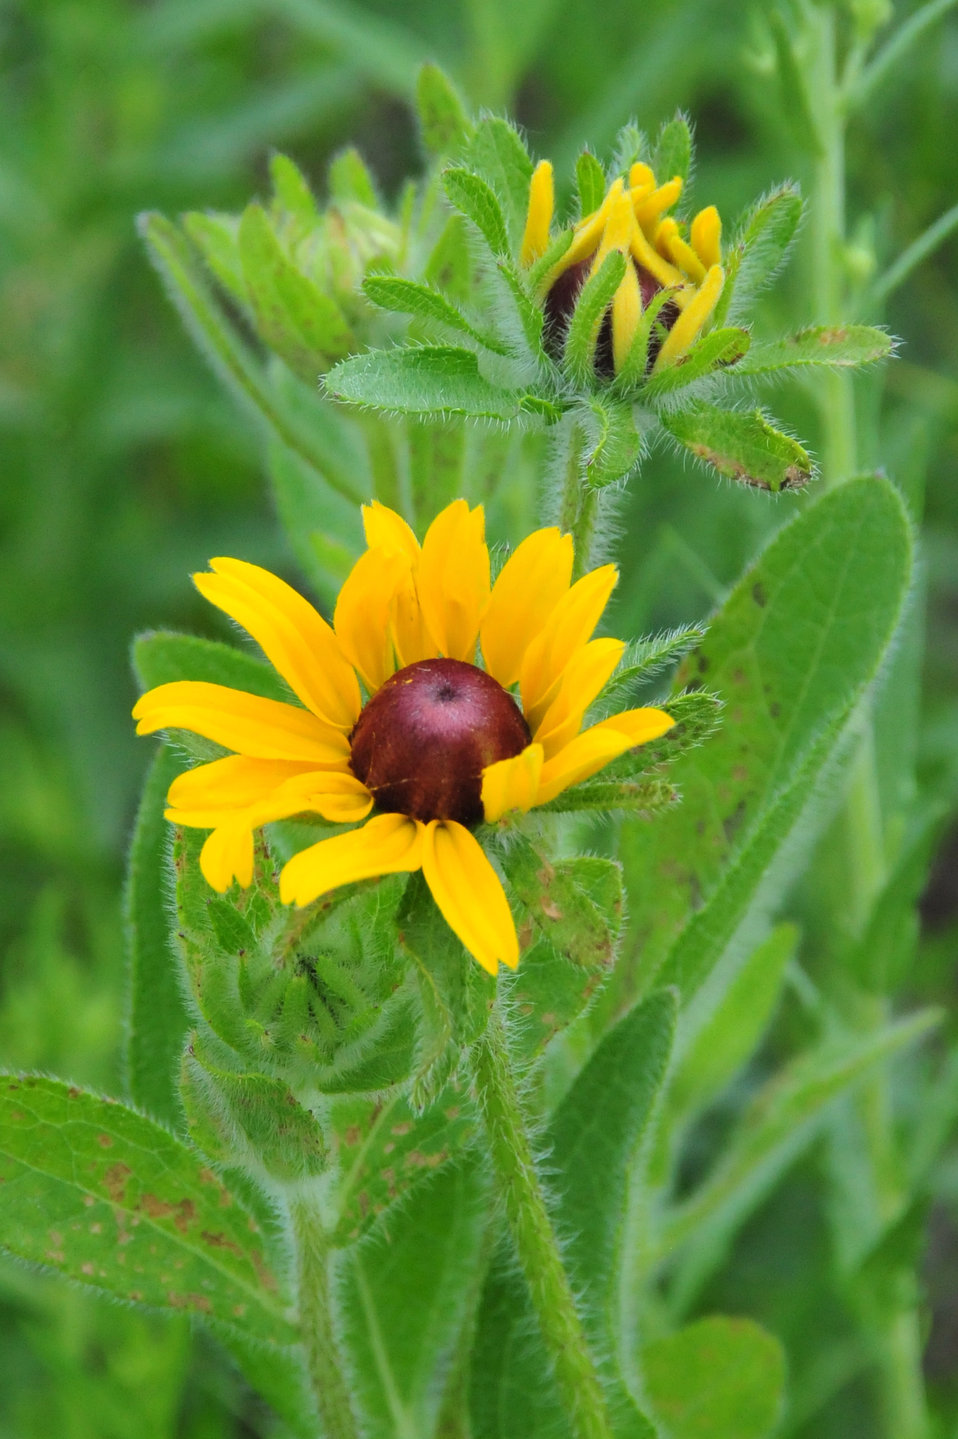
Black-eyed Susan (Rudbeckia hirta) is a biennial wildflower of mixed and tallgrass prairies. It germinates and grows a seedling the first year and the second year produces abundant seeds before dying, relying on the seeds it produced to perpetuate in the prairie. It is commonly seeded in prairie restorations creating a show of color in the first years before fading until a disturbance of some type allows seeds to germinate and grow again.